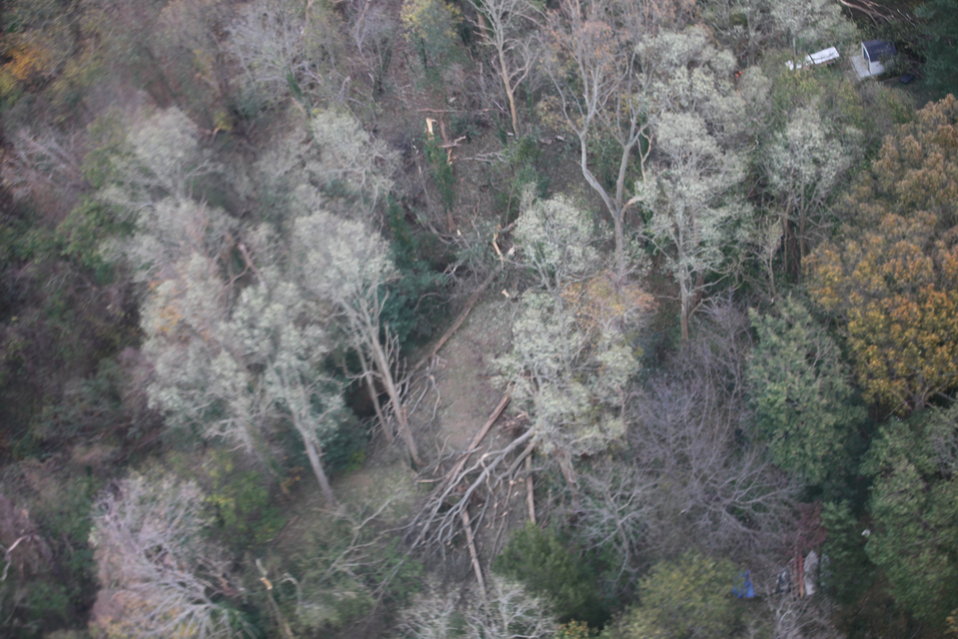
Tree damage at Target Rock National Wildlife Refuge (NY)

Aerial view of tree damage at Target Rock National Wildlife Refuge on Long Island, NY in the aftermath of storm Sandy.